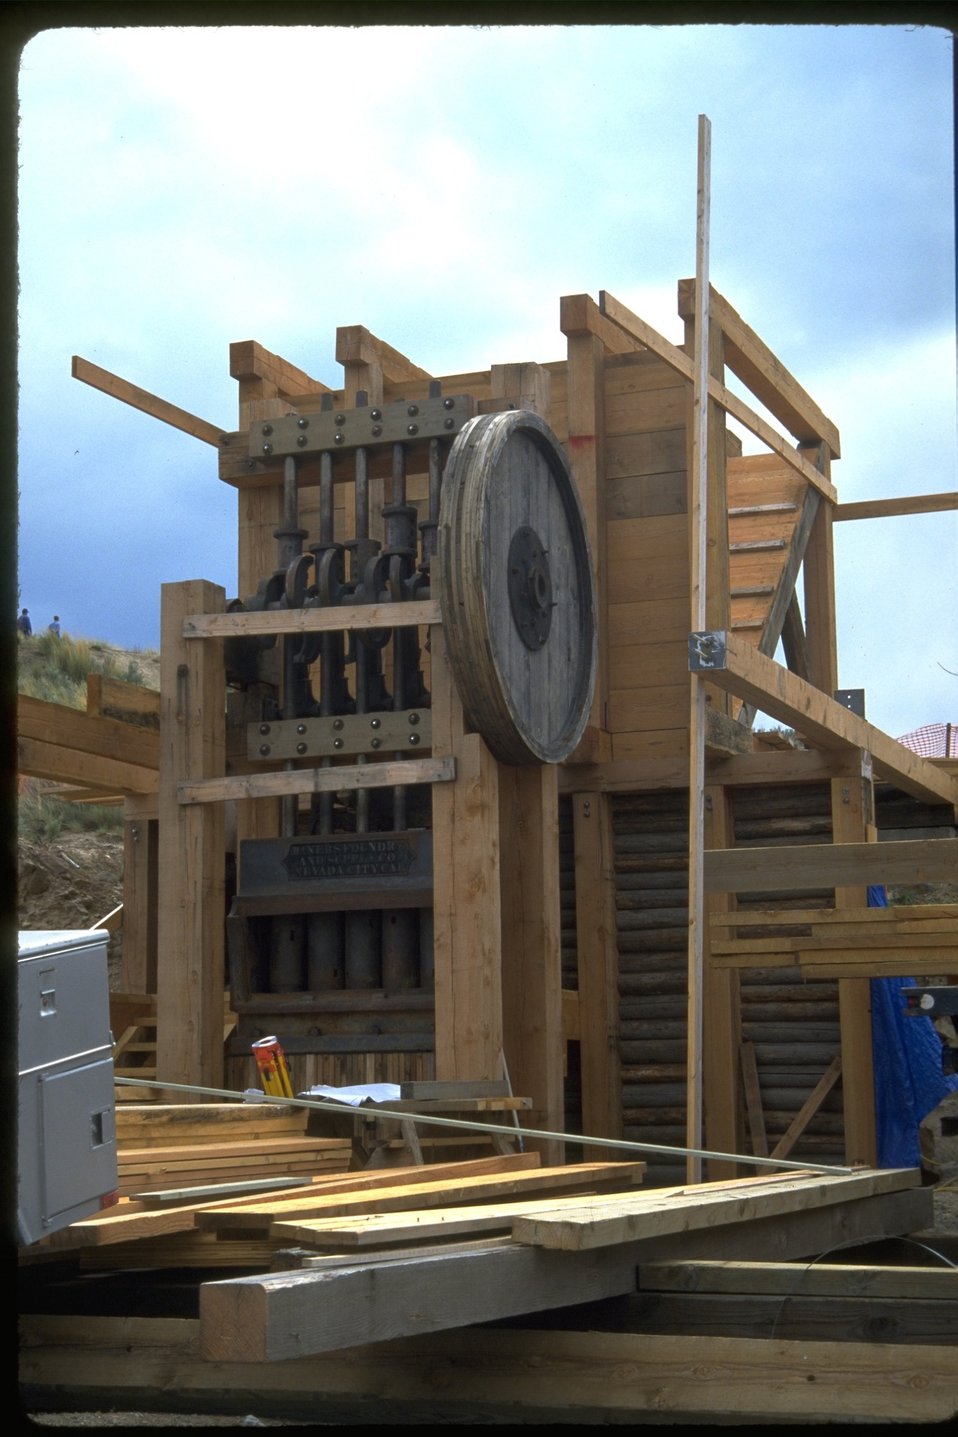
Rabbit Mine Construction.